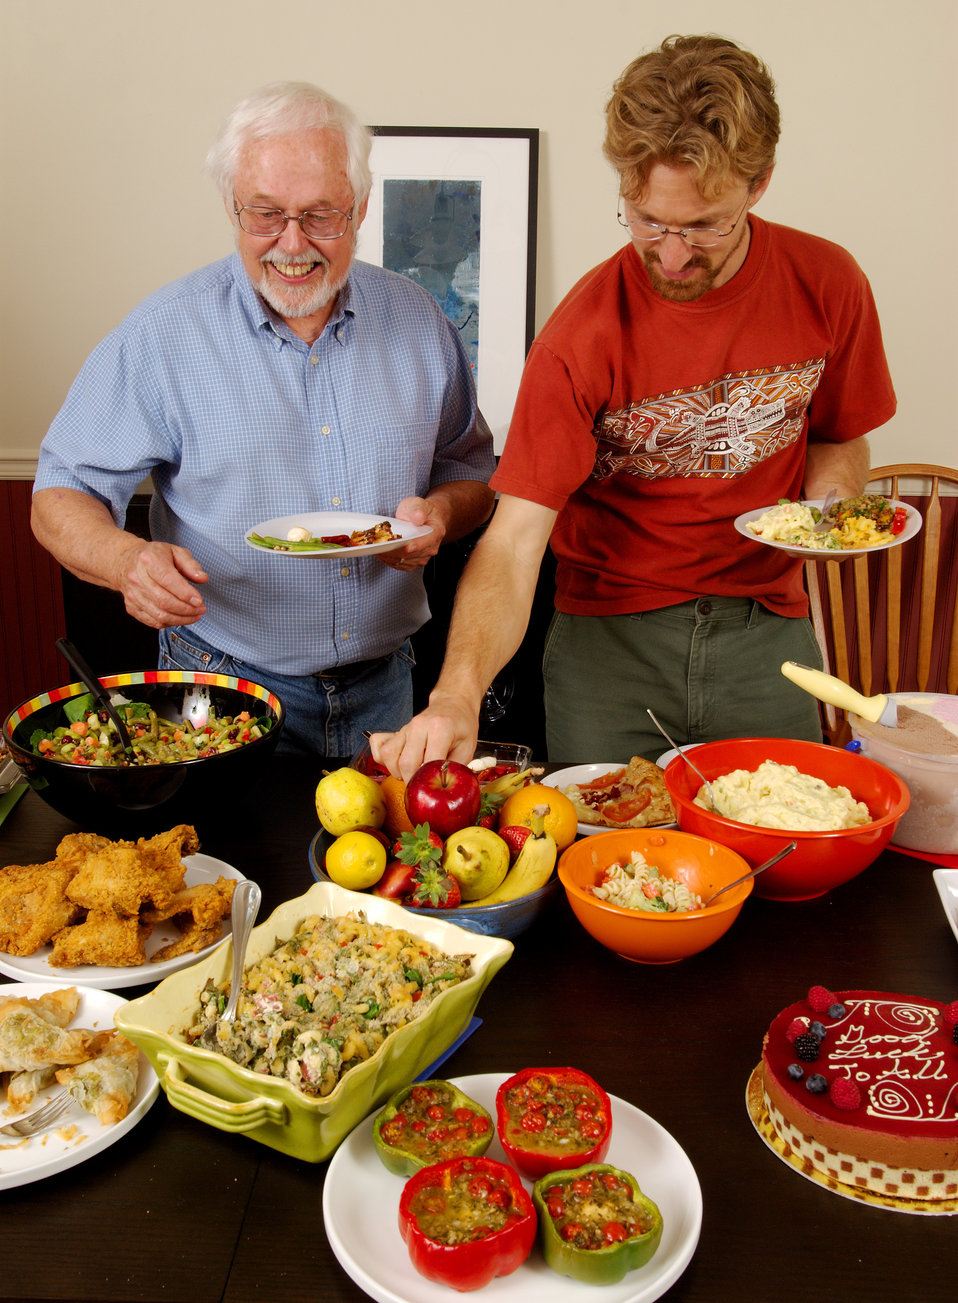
This image depicts two men, serving themselves at a dining table, atop which was plated a large quantity of foods representing a number of different food groups: grains, fruits, vegetables, milk products, meats/poultry/fish, and nuts/seeds/legumes.